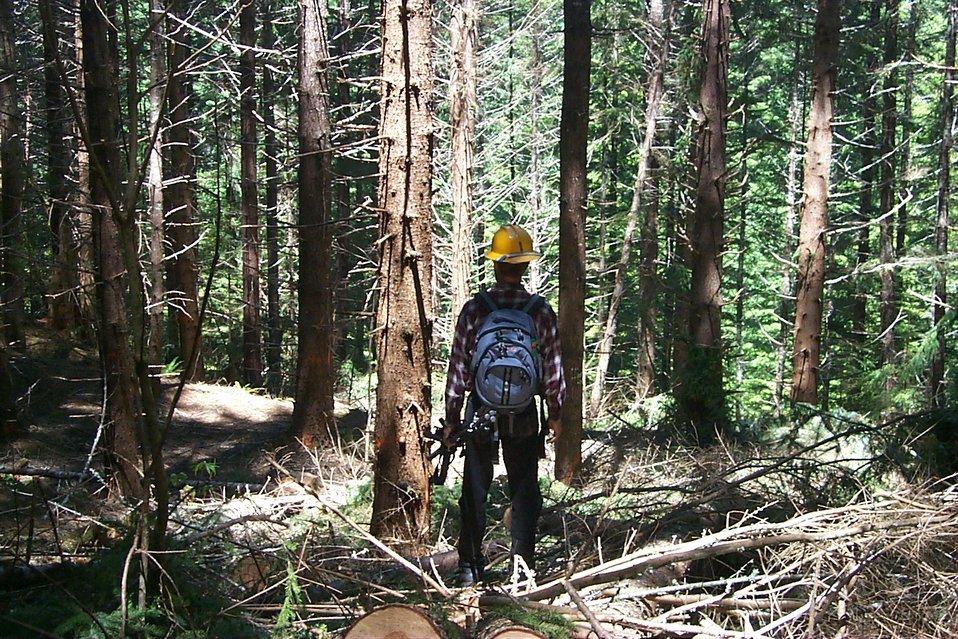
Camas East Timber Sale in Late Successional Reserve.